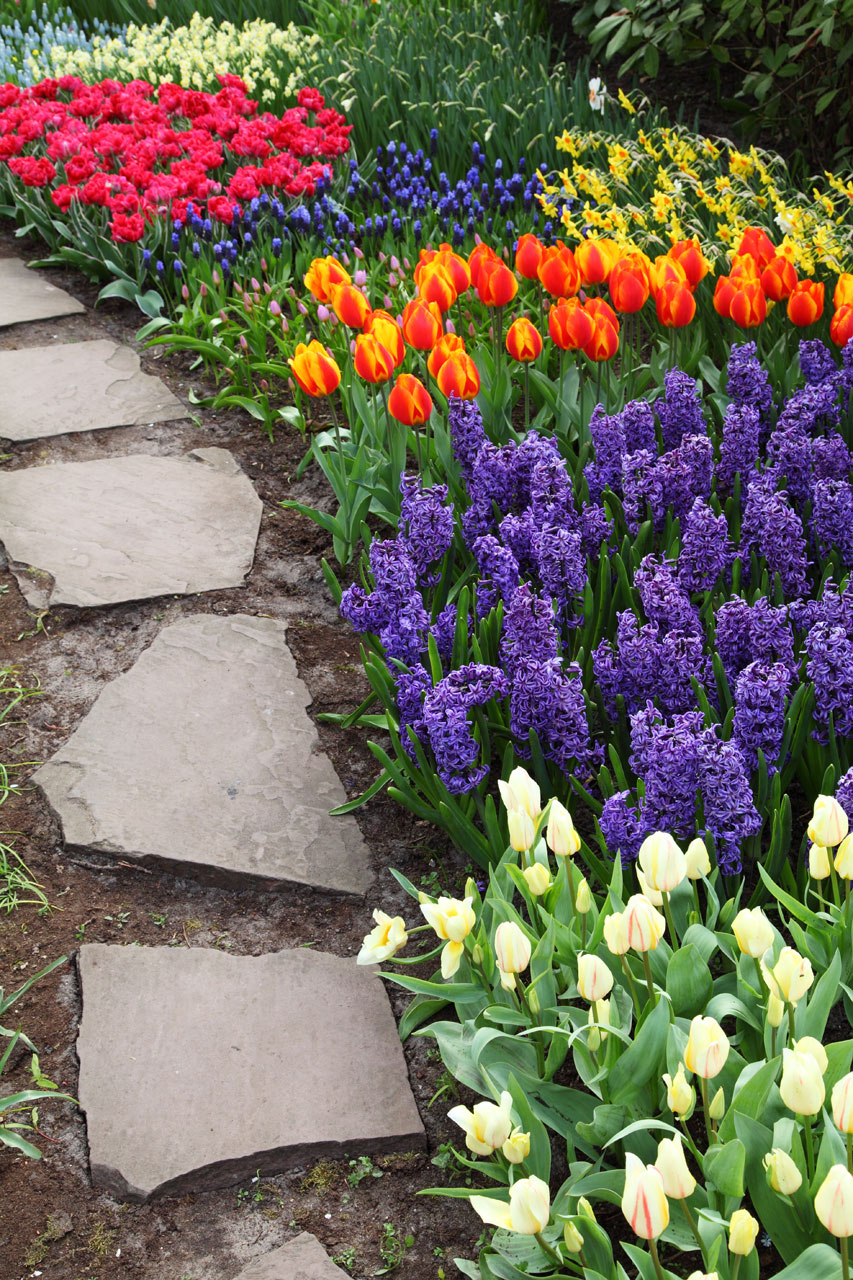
Path and flowers

Stone path next to tulips and hyacinths.